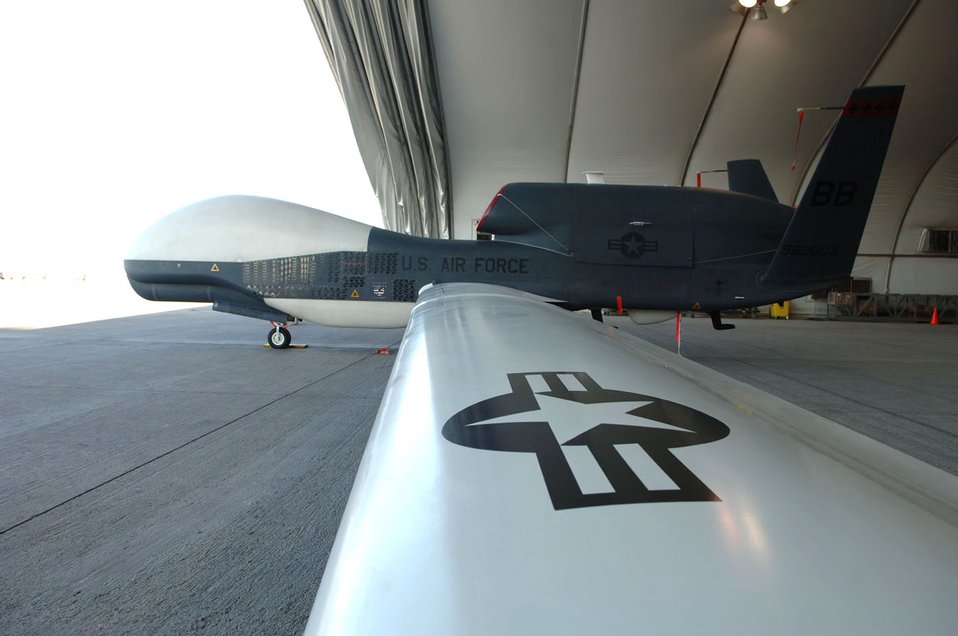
Global Hawk

SOUTHWEST ASIA (AFPN) -- Prototype Global Hawk Air Vehicle No. 3 sits ready in its hangar before a voyage halfway around the world to Edwards Air Force Base, Calif.